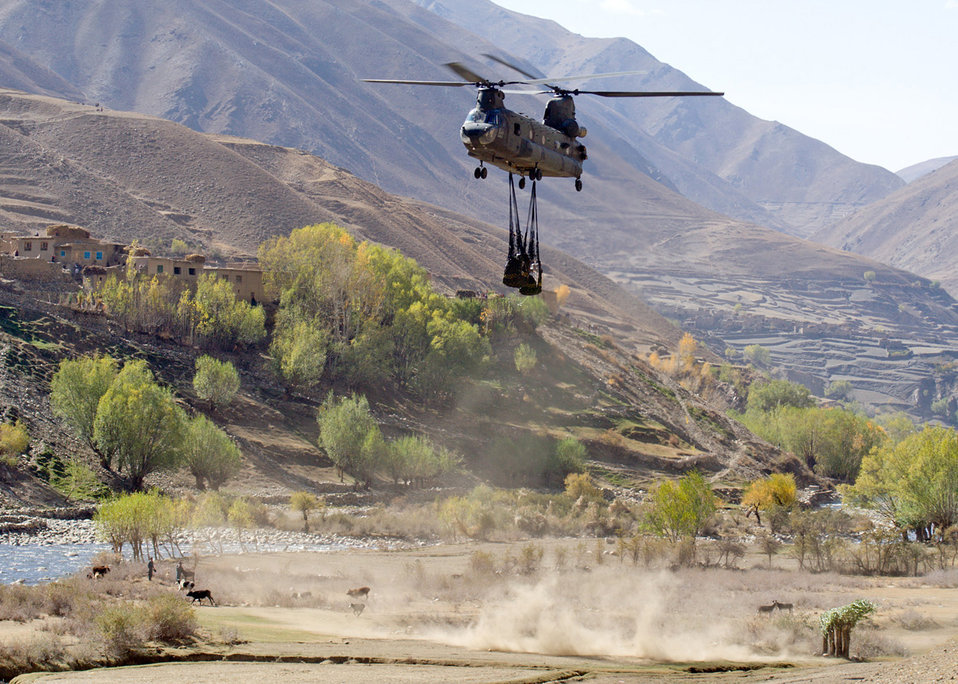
Afghan PRT treats patients, prepares village for winter

Humanitarian assistance is dropped in the Panjshir Province's Paryan District Oct. 28. At nearly 10,000 feet above sea level, Paryan has the highest elevation of the six districts in the Panjshir Valley. Since the rough and narrow road to the district cannot support truck transport, helicopter airlift of supplies was necessary. Using slings around pallets of food supplies, a Chinook helicopter's crew prepares to drop off one of two loads totaling four tons to help the district's 38,000 residents prepare for winter.